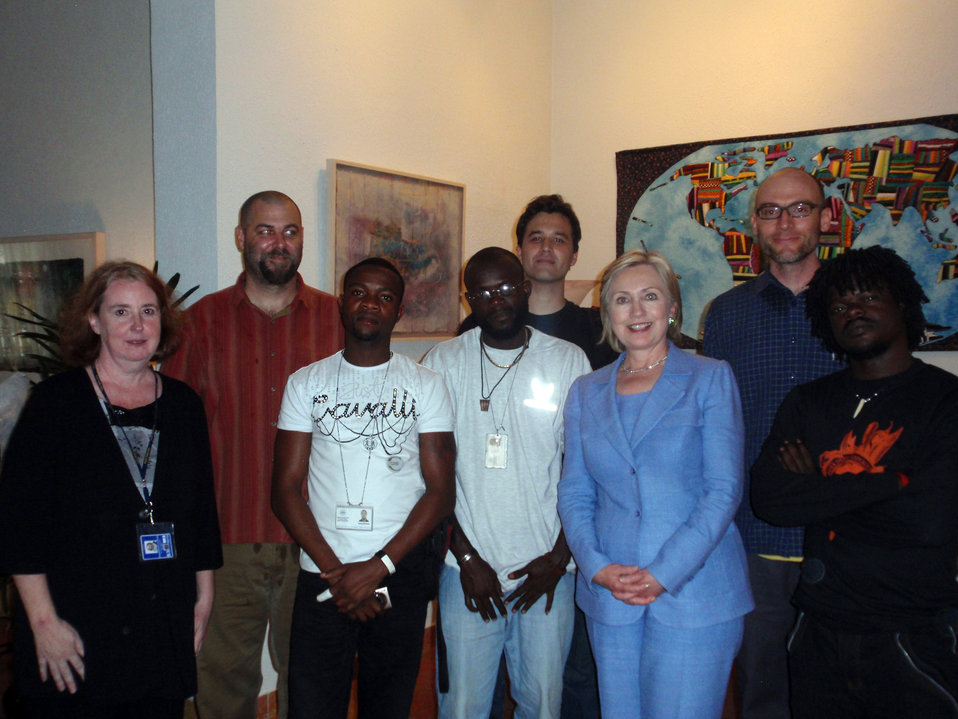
Behind the Scenes: Secretary Clinton With Camera Crew in Kinshasa

U.S. Secretary of State Hillary Rodham Clinton poses for a photo with the camera crew in Kinshasa, Democratic Repbulic of Congo August 10, 2009.